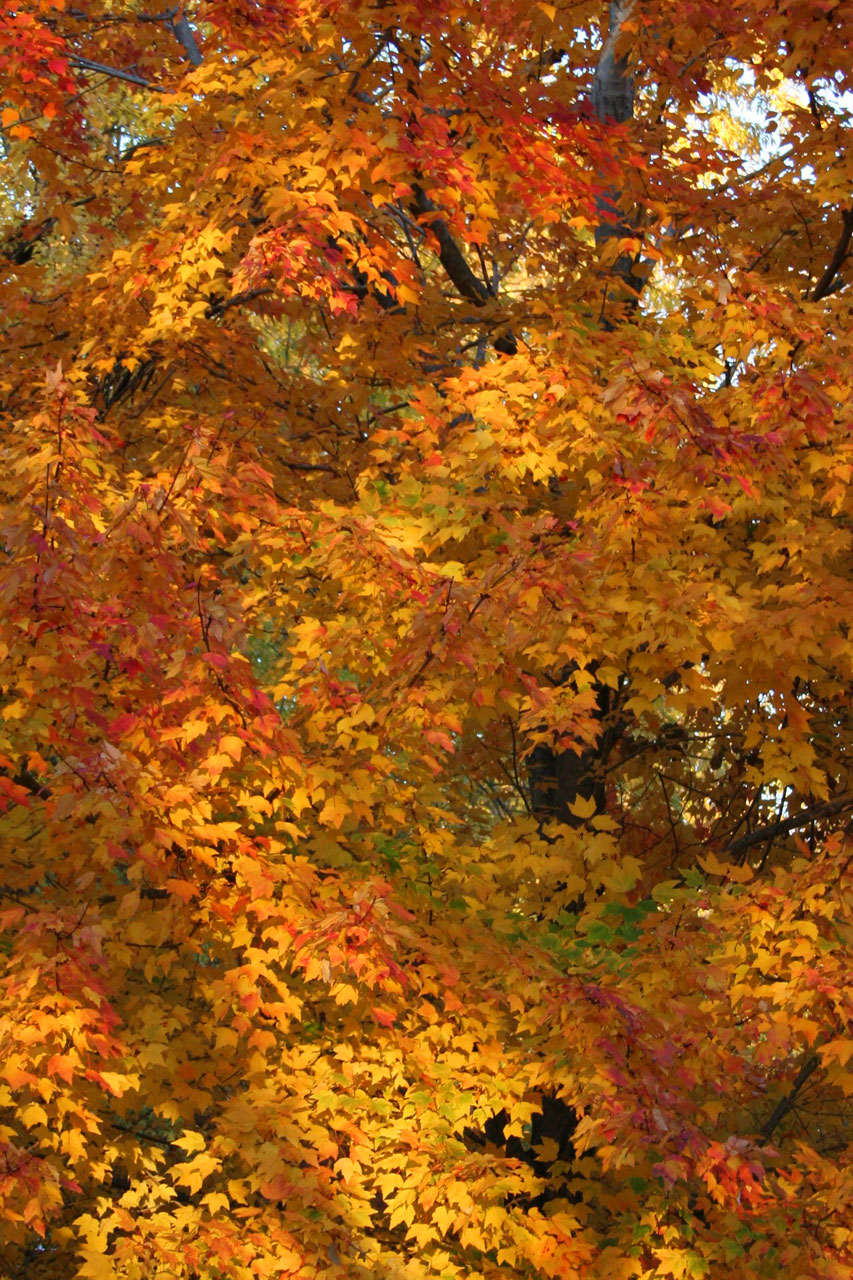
Autumn yellow

Large medium shot of golden yellow and orange tree during peak foliage.